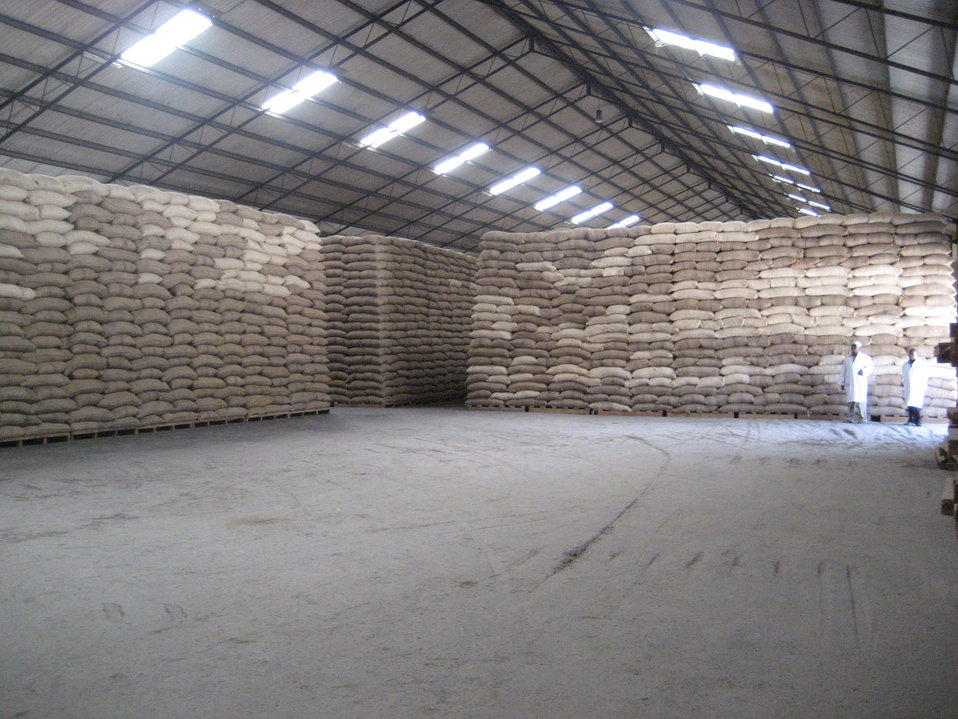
Deputy Secretary Neal Wolin’s trip to Africa 2009

The National Reserve Food Agency (NFRA) in Dar Es Salaam, Tanzania. Originally created during the continent-wide food shortage in 1974, NFRA procures, stores, and releases emergency food stocks and provides farmers in rural areas with alternative market outlets.